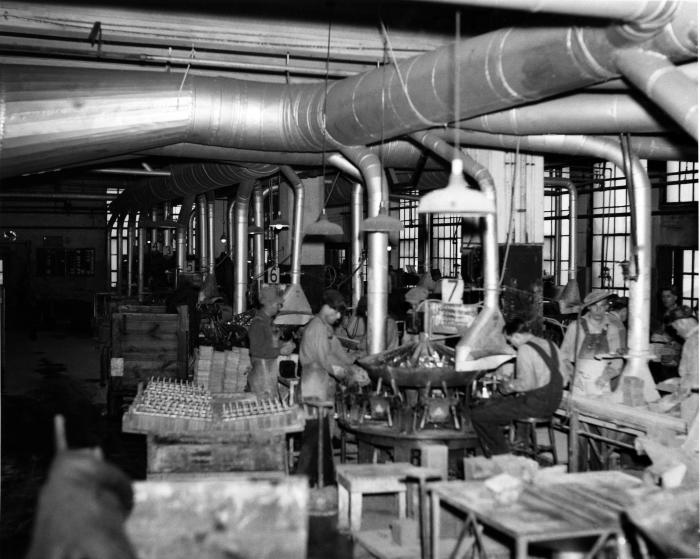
This 1947 photograph was provided by the Center for Disease Control's (CDC), National Institute for Occupational Safety and Health (NIOSH). The image depicted a number of employees in an Indiana lead battery manufacturing plant. Note that the workers were not using respiratory protection, however, it appeared that workstation ventilators were present.Workers can be exposed to lead through inhalation of fumes and dusts, as well as through ingestion as a result of lead-contaminated hands, food, drinks, cosmetics, tobacco products, and clothing. Furthermore, workers can take lead home on their clothes, skin, hair, tools, and in their vehicles, potentially exposing their families to this element's harmful health effects.